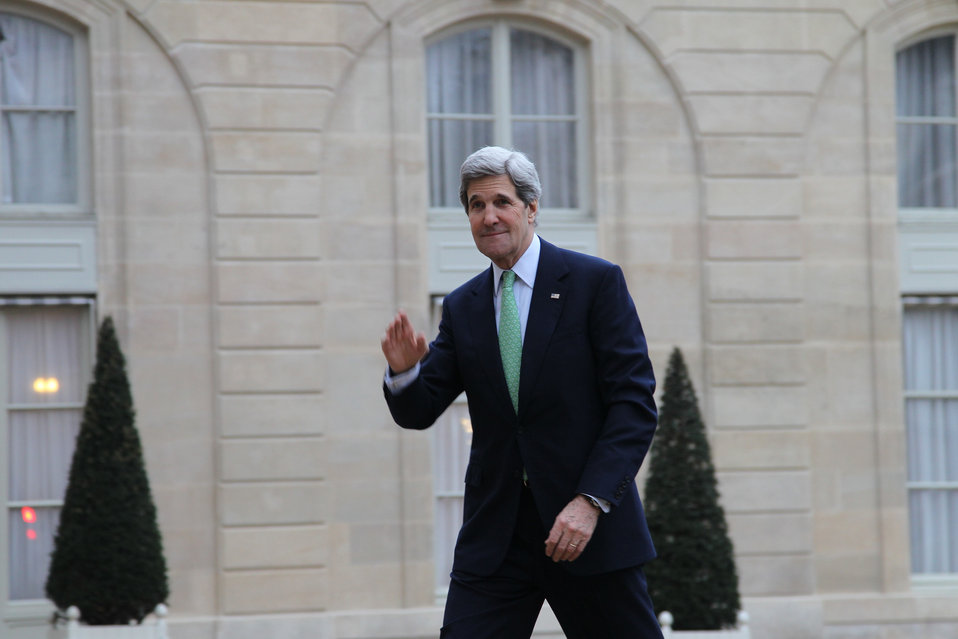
Secretary Kerry Arrives at Élysée Palace

U.S. Secretary of State John Kerry arrives at Élysée Palace in Paris, France, on February 27, 2013.